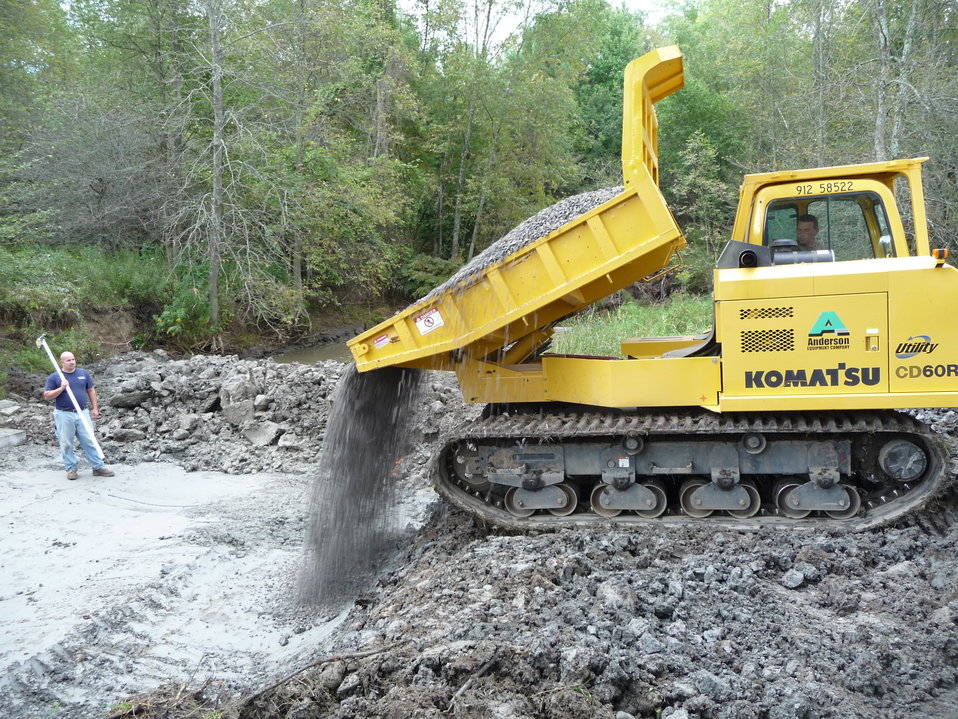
Little Sucker Brook: Placing stone

A contractor placed stone along the bottom for the arch's base.